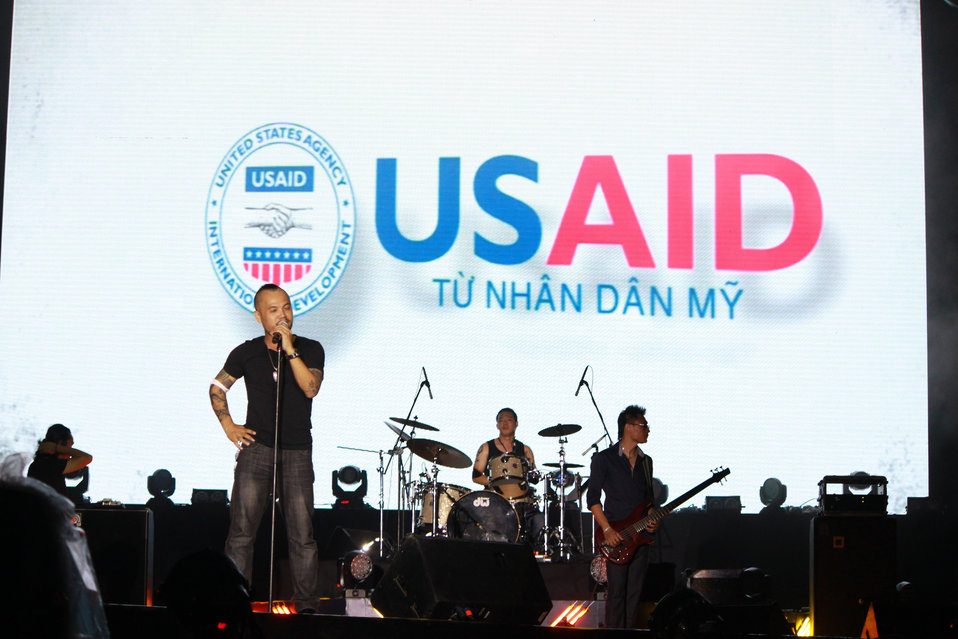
Tran Lap of Vietnam's top rock band Buc Tuong joins local and international artists at MTV Exit concert in Hanoi to fight against human traffickinng

A great concert that attracts 40,000 fans in My Dinh Stadium in Hanoi with strong messages against human trafficking.